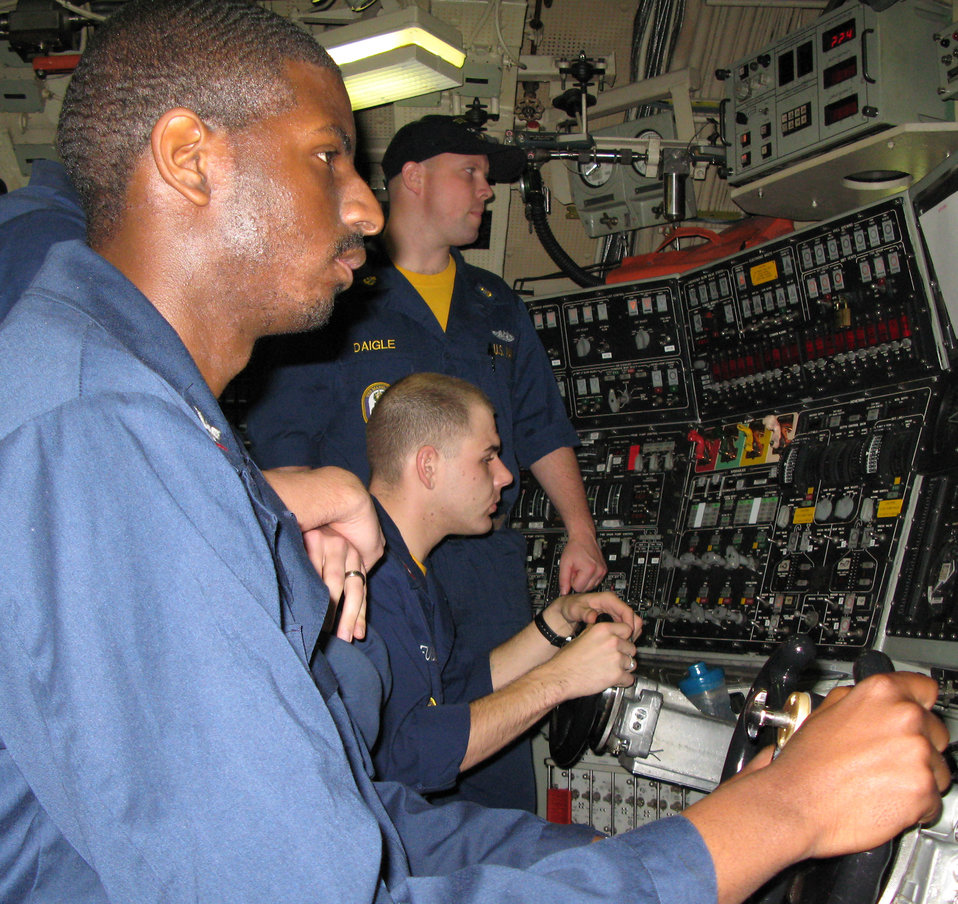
Trident submariners provide strategic deterrence

Navy Petty Officer 3rd Class Lamar Johnson uses the helmsman's controls to help pilot the strategic missile submarine USS Maryland Feb. 15 as the vessel cruises somewhere in the Atlantic Ocean.